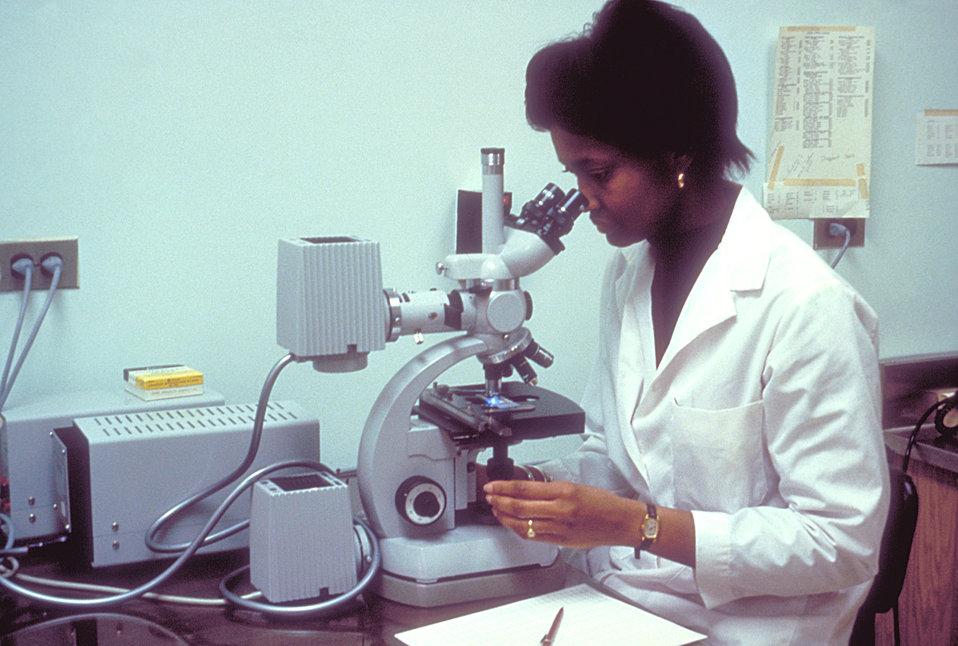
This microbiologist is analyzing sera by indirect antibody staining for antibody to Legionella spp..